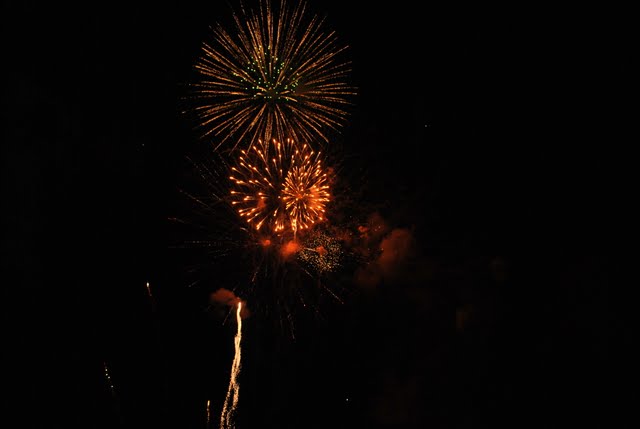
July 4th Celebration at U.S. Embassy in the Dominican Republic

Guests watch the fireworks display at the U.S. Independence Day celebration at the U.S. Embassy Santa Domingo in Dominican Republic at the Chief of Mission's Residence on July 2, 2010.